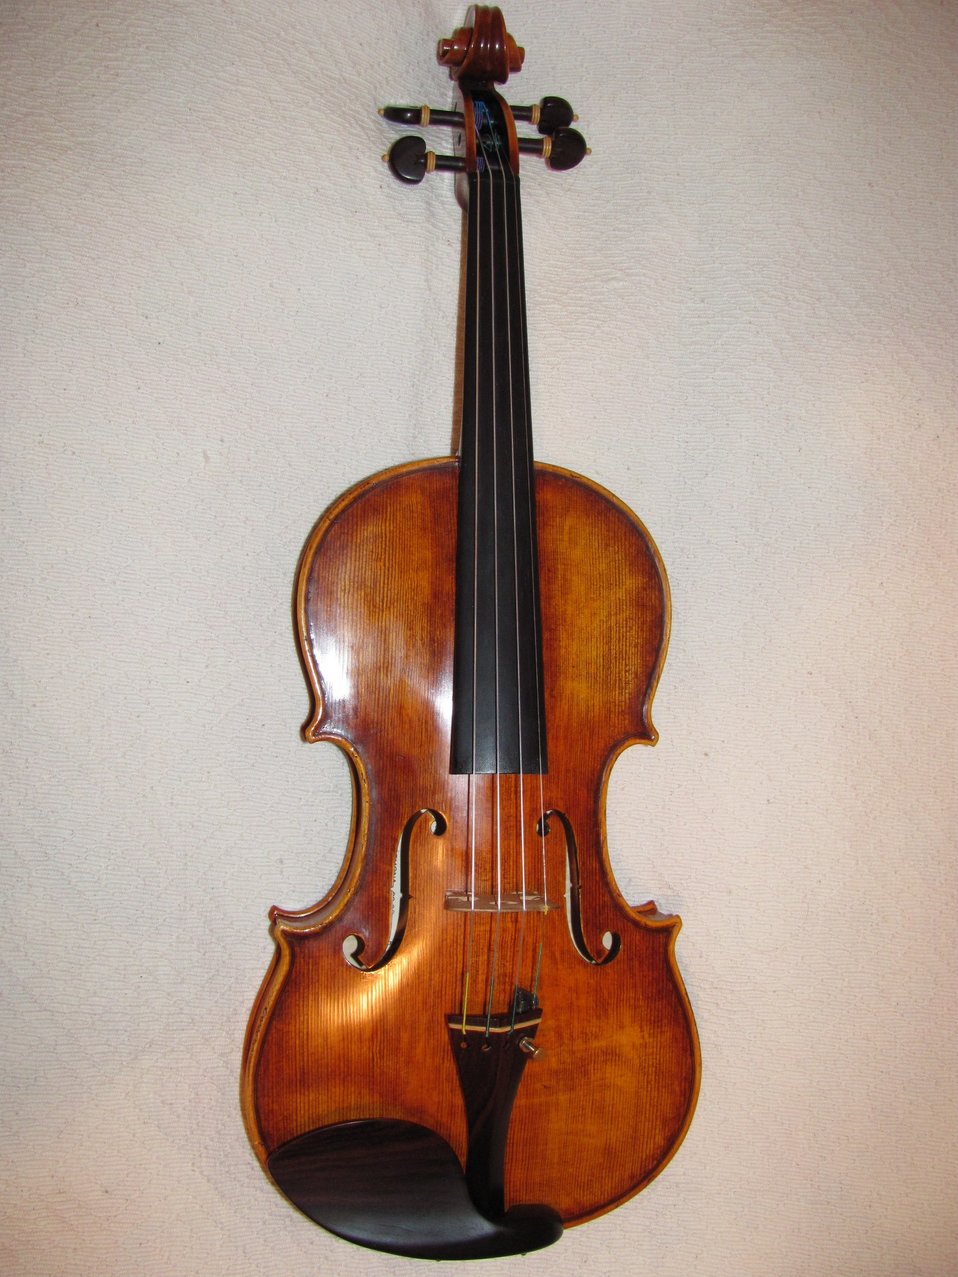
Italiano: violino copia di uno Stradivari, questo è un eccellente esempio dell'opera del maestro liutaio Alfredo Primavera